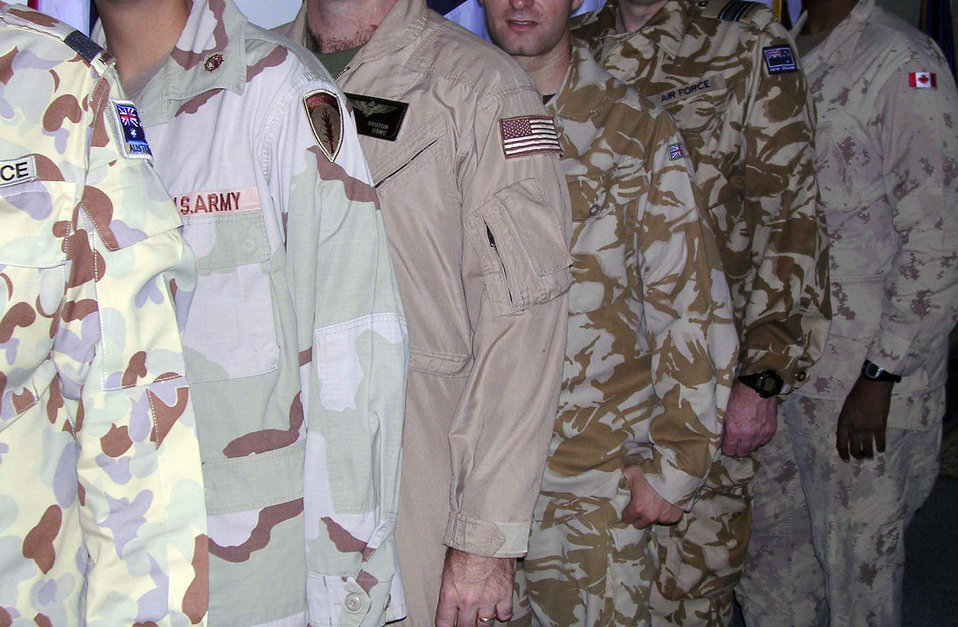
Total force, joint, coalition team create synergy in CAOC

SOUTHWEST ASIA -- The Central Air Forces Combined Air Operations Center is staffed by active-duty, Guard and Reserve forces from all the U.S. services as well as coalition partners. Some services represented at the center include (from left) the Royal Australian air force, U.S. Army, U.S. Marine Corps, Royal air force, New Zealand air force and Canadian air force. Servicemembers work side by side planning and executing operations for operations Iraqi Freedom and Enduring Freedom as well as Joint Task Force-Horn of Africa.